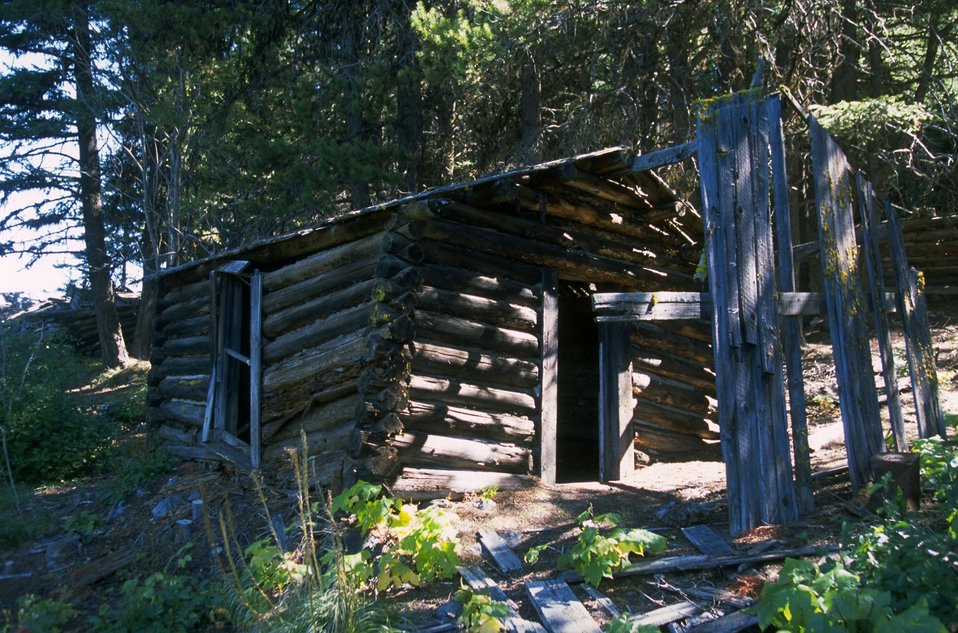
Old cabin in Coloma